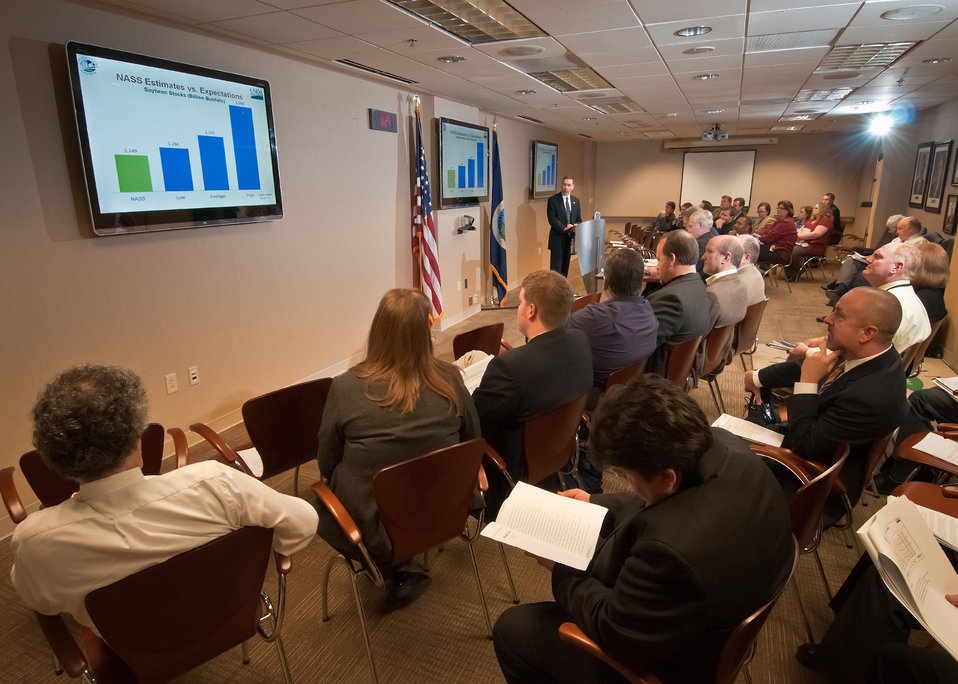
Lance Honig, Chief, Crops Branch, National Agricultural Statistics Service explains the United States Department of Agriculture’s, National Agricultural Statistics Service, March Agricultural Survey to USDA cabinet members, agricultural journalist, guest farmers, NASS employees and interns at the USDA, NASS Lockup in Washington, DC, Thursday, March 31, 2011. The NASS lockup is agricultural commodity information held until the Secretary of Agricultural or Secretary’s Designee has signed and released the information. The signing is the official act of recognizing the information as an official USDA document.